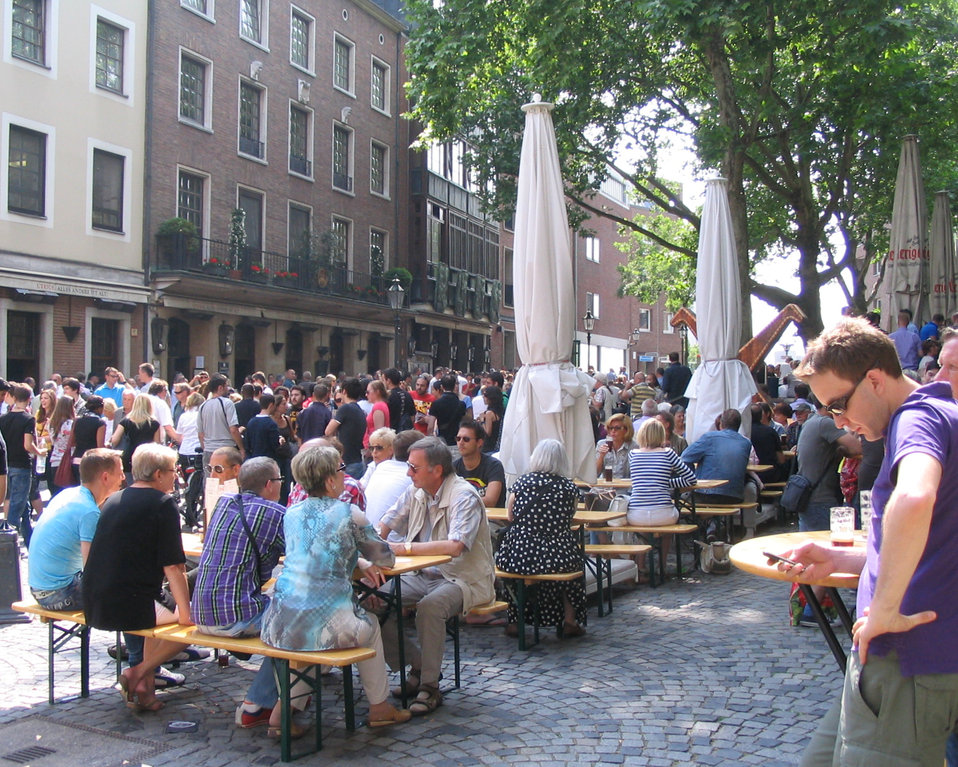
Deutsch: Die Düsseldorfer Altstadtkneipe Uerige an einem schönen Samstagnachmittag im Mai 2011.